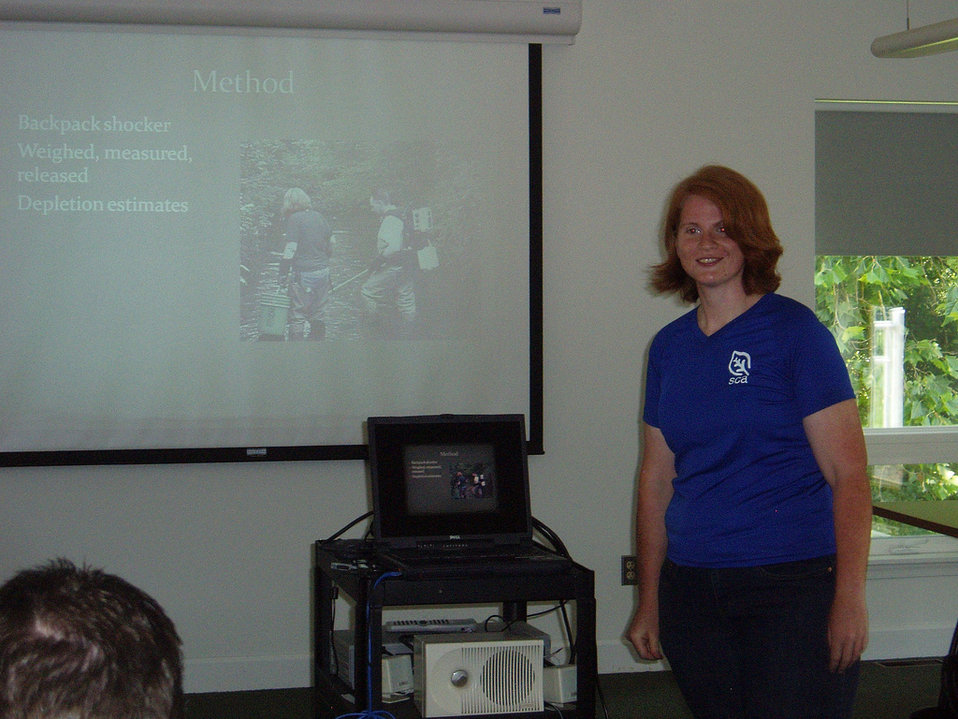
Giving a presentation

U.S. Fish and Wildlife Service